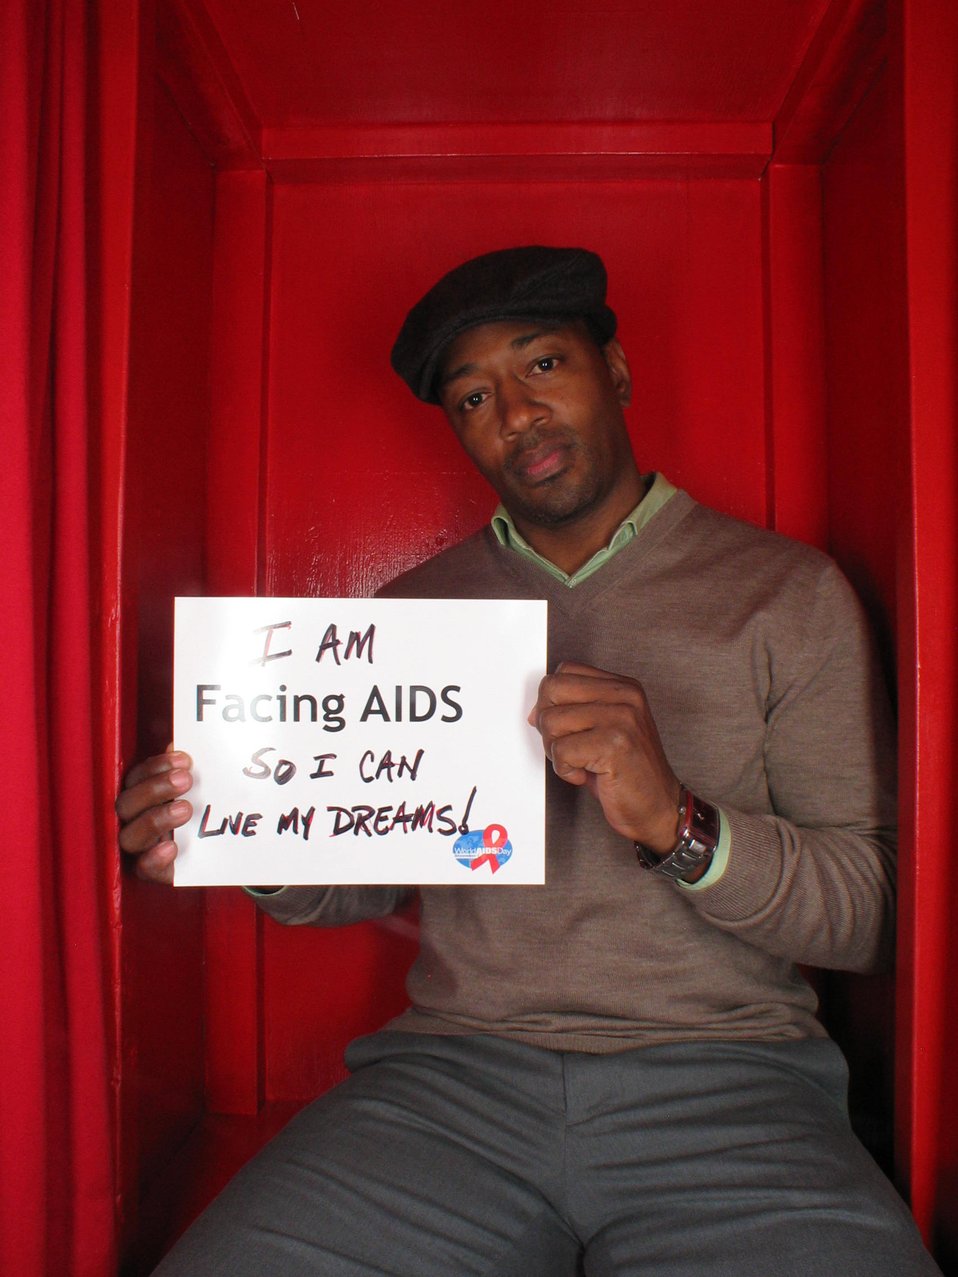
I am Facing AIDS so I can live my dreams!